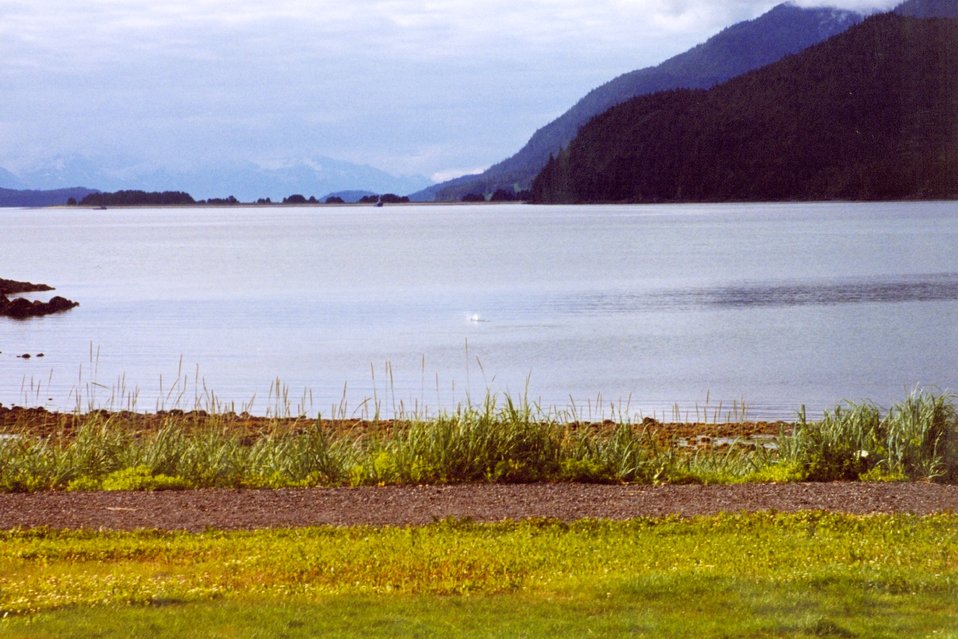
A placid bay in Southeast Alaska